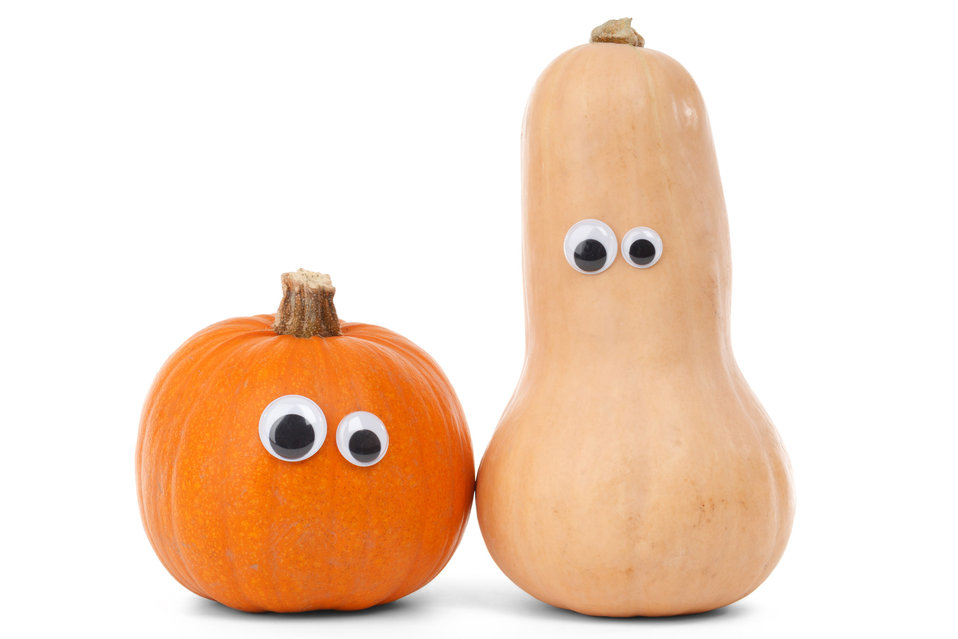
Pumpkin friends

Two pumpkin friends isolated on white background.